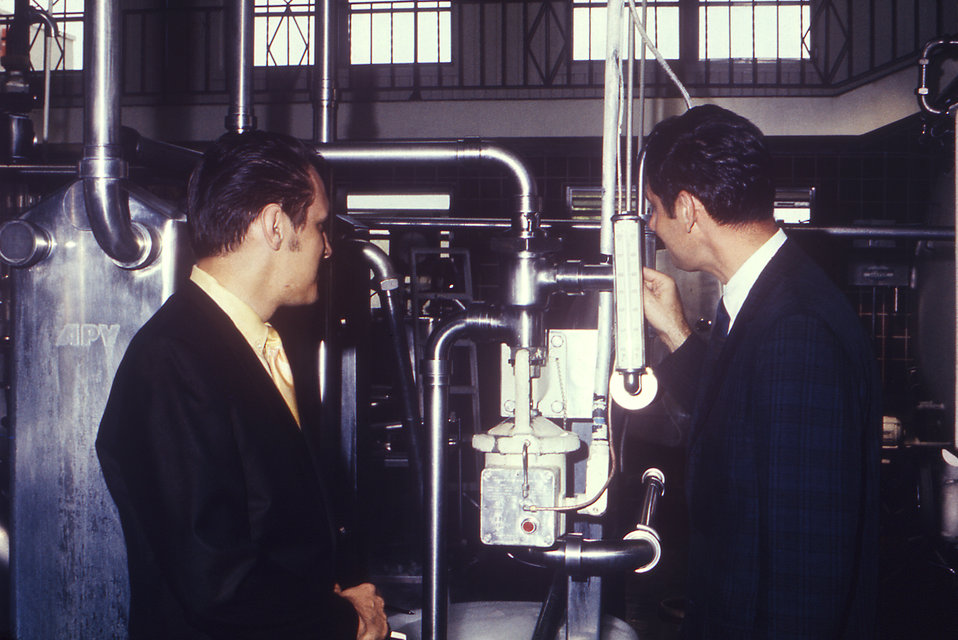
In this 1970 photograph, two CDC sanitarians Frank Bran (Rt), and an unidentified official, were inspecting the milk production mechanisms and pipelines in this dairy, for cleanliness, and general wear and tear.